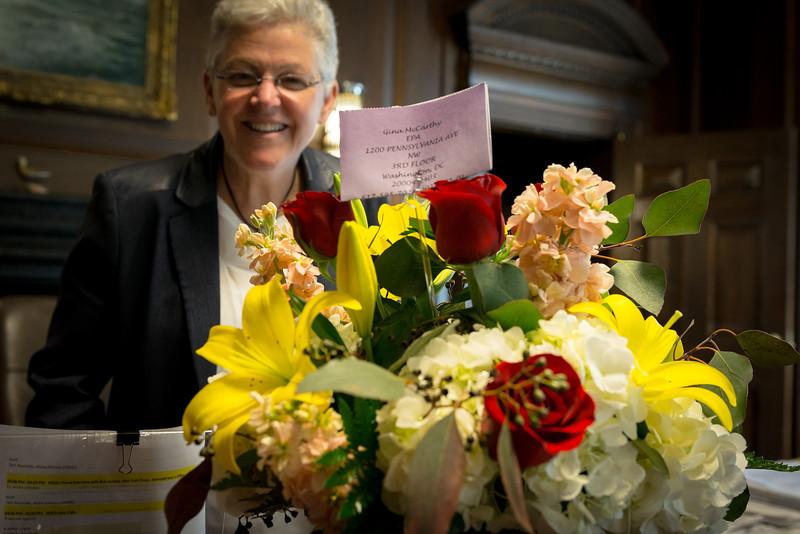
Day in the Life - June 2, 2014

3:09 pm - Flowers from McCarthy’s family. (14/15)